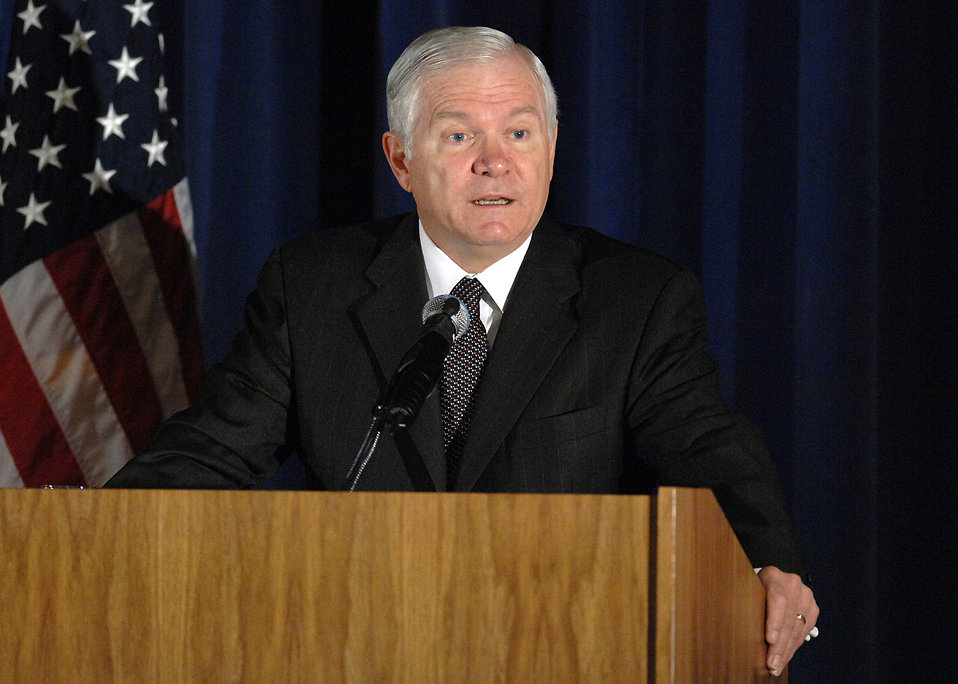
Defense secretary: Increase focus on nuclear mission

Secretary of Defense Robert M. Gates speaks to top Air Force Space Command leaders June 10 at Peterson Air Force Base, Colo. Secretary Gates also held a question and answer session in the open forum.